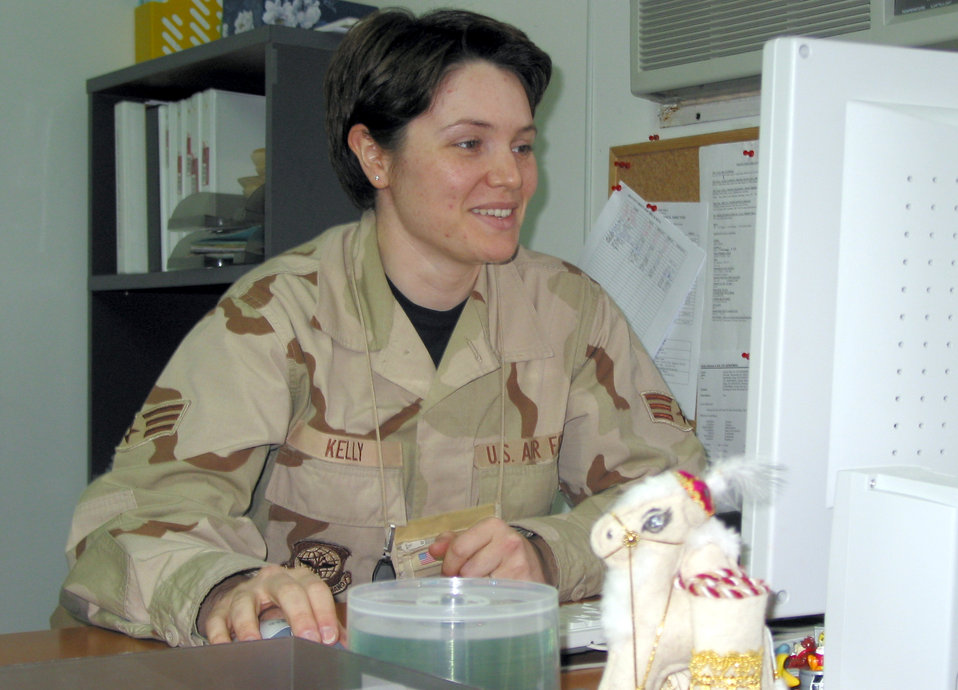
Airman fulfills 'the American dream'

MANAS AIR BASE, Kyrgyzstan (AFPN) -- Senior Airman Deliana Kelly works at her desk in the 376th Mission Support Group's headquarters. Airman Kelley came to America from Bulgaria in 1999, and has since received her citizenship after joining the Air Force.